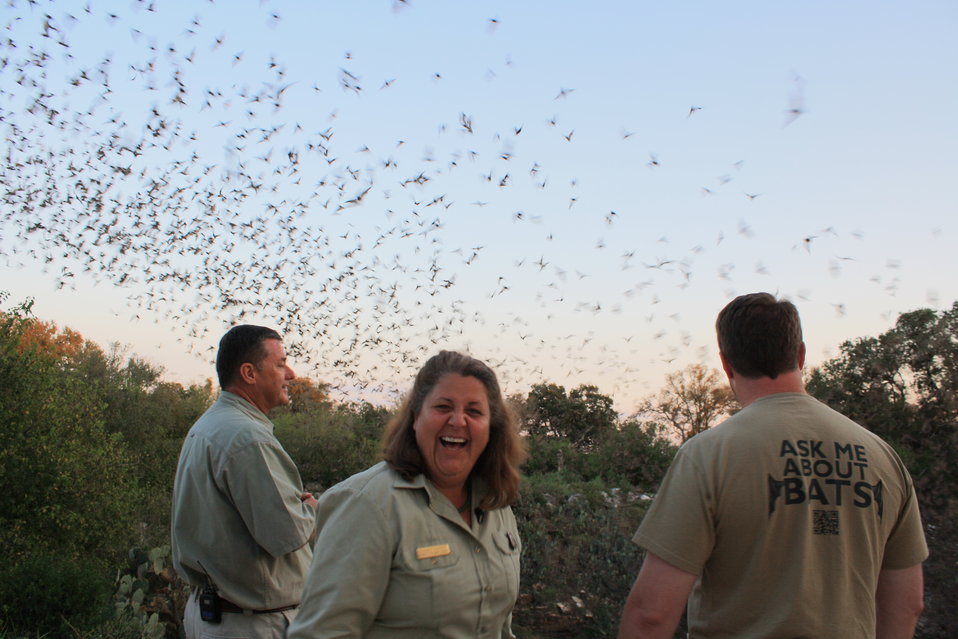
BCI and US Forest Service staff observe bats

BCI staff Fran Hutchins and James Eggers and US Forest Service staff Sandy Frost marvel at the millions of bats exiting the cave